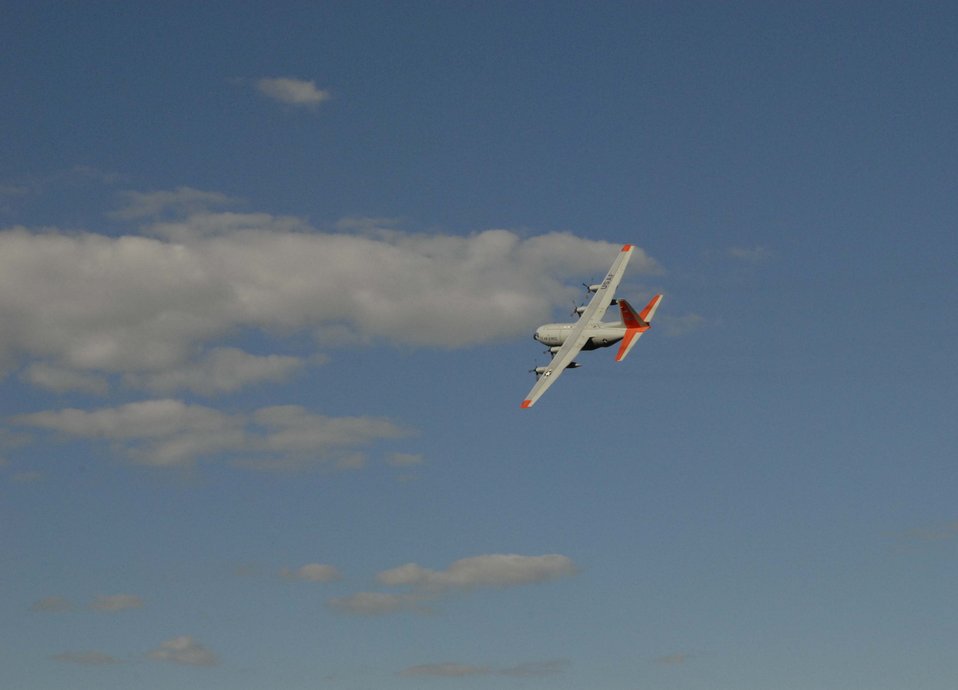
Airmen pay tribute to fallen guardsman

An LC-130 Skibird from the New York Air National Guard's 109th Airlift Wing at nearby Stratton Air National Guard Base tips its wings Sept. 11 during a flyover of the funeral ceremony for Master Sgt. Joseph Longobardo. Sergeant Longobardo, a guardsman with the 109th Security Forces Squadron, was a New York State Police officer who was killed in the line of duty Sept. 3 while participating in the manhunt for fugitive Ralph